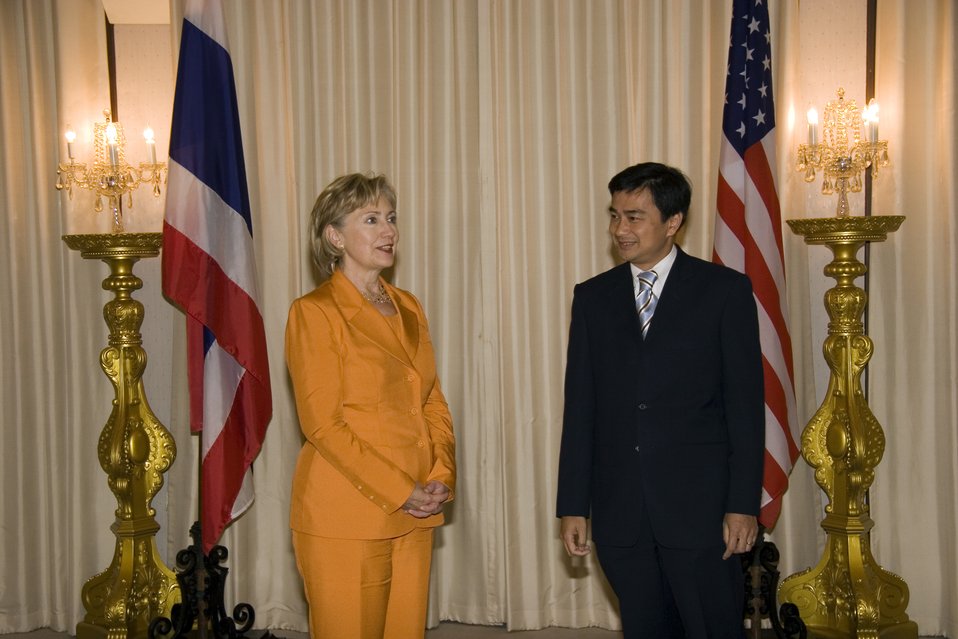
U.S.-Thailand Bilateral Meeting

U.S. Secretary of State Hillary Rodham Clinton shakes hands with Thai Prime Minister Abhisit Vejjajiva prior to the bilateral meeting at Government House in Bangkok, Thailand July 21, 2009.